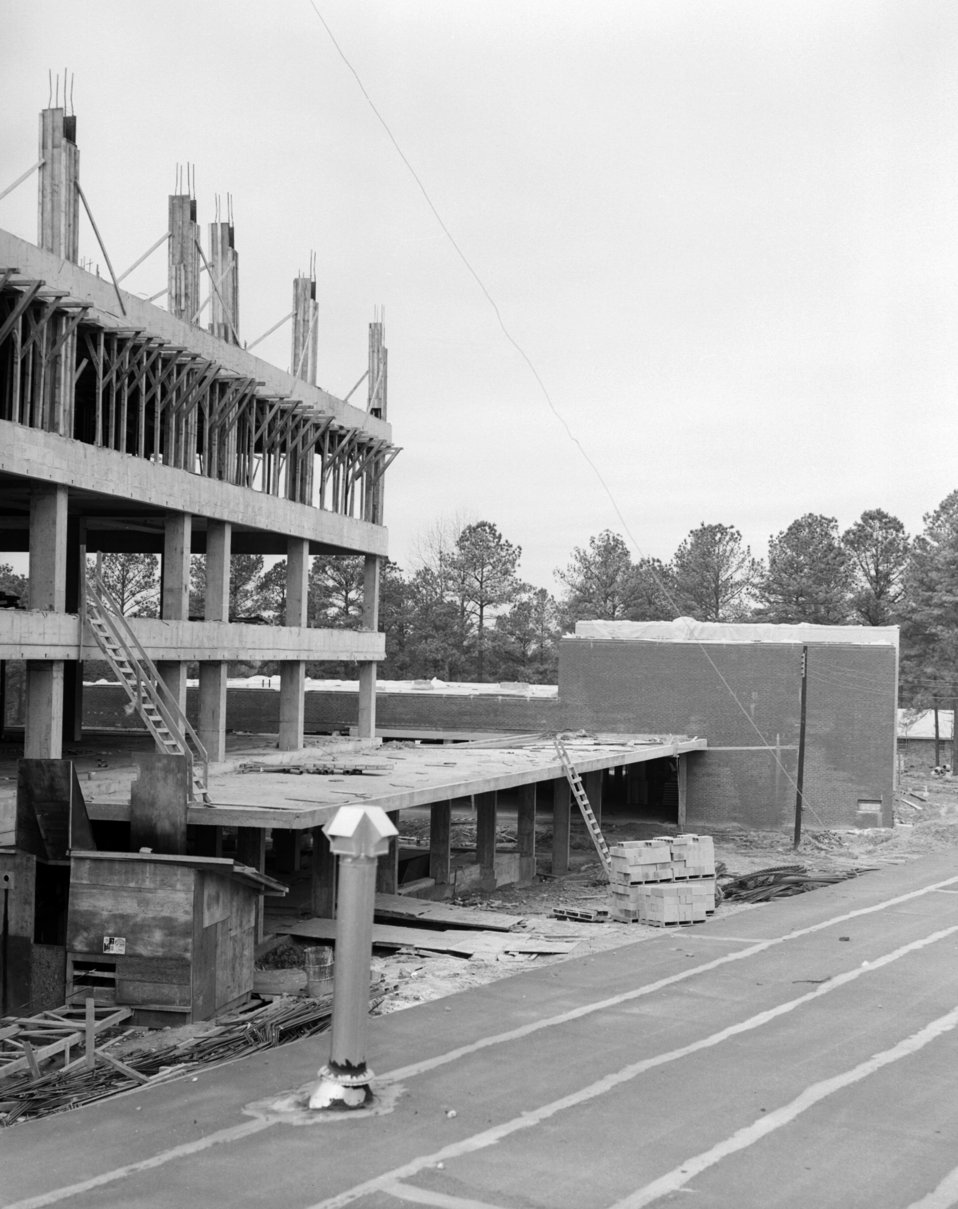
The CDC, Clifton Road, Atlanta, GA. campus under construction in 1959.